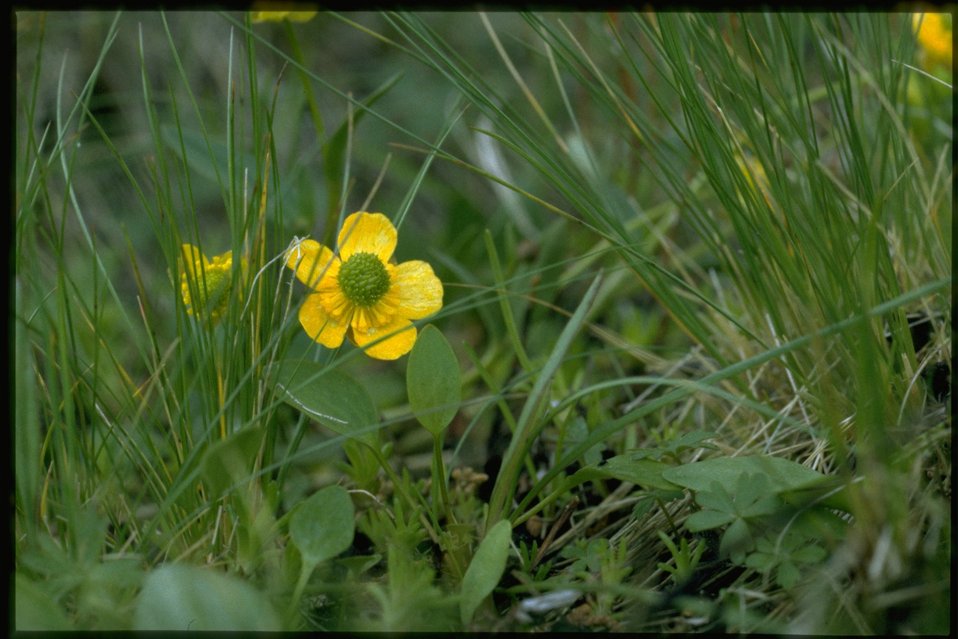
Closeup shot of Sagebrush Buttercup, Ranunculus Glaberrimus, wildflowers.